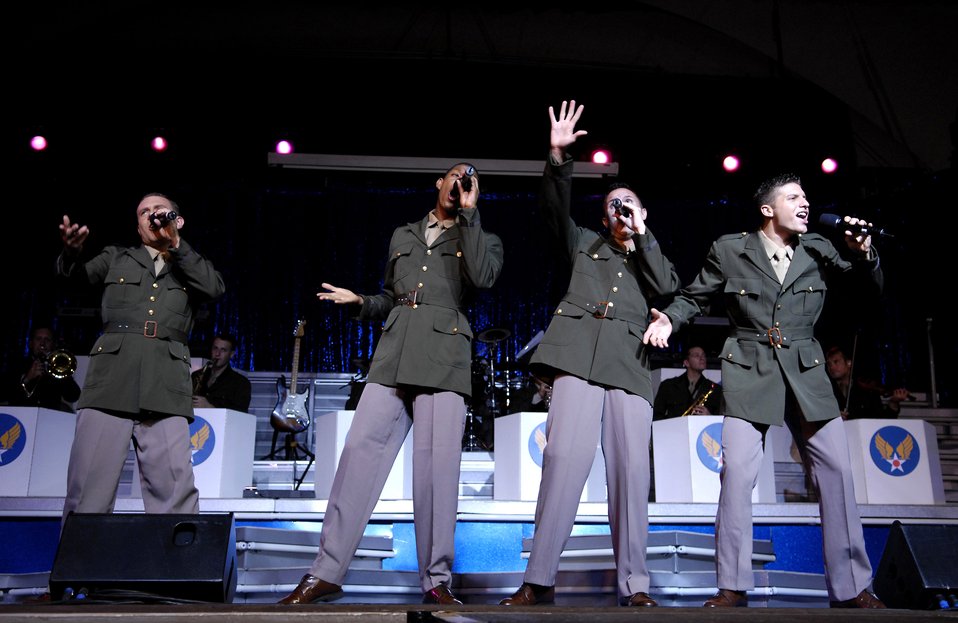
Uniquely ukulele: Airman plays from the heart

Tops In Blue performs Sept. 12 at the Waikiki Shell in Honolulu. The Air Force's signature entertainment group gave a free performance for the public to celebrate Air Force Week Honolulu and the Air Force's 60th anniversary.